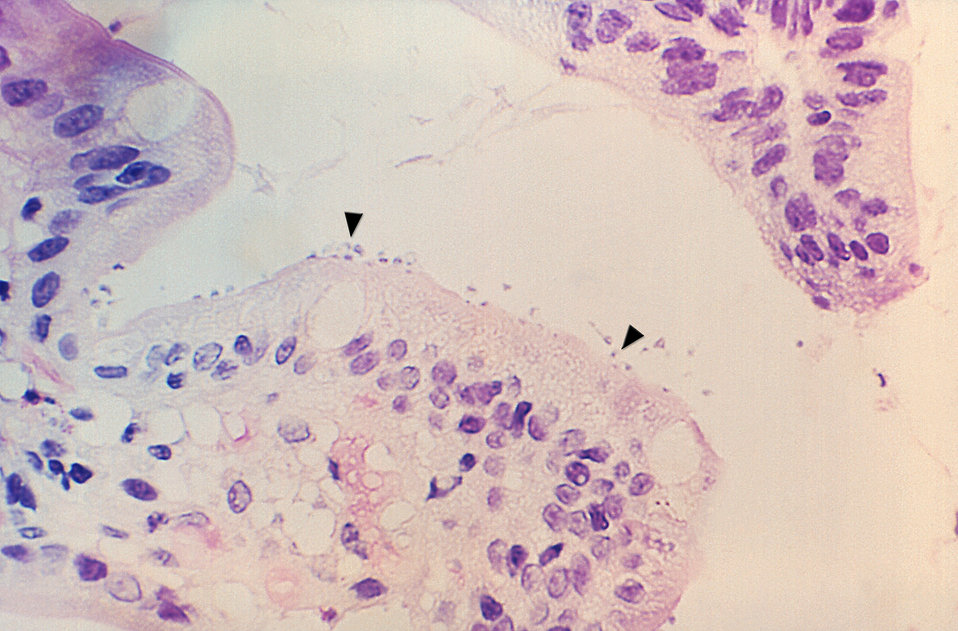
Under low magnification, this photomicrograph reveals some of the histopathologic changes displayed by a section in small bowel tissue biopsy in a case of cryptosporidiosis due to an unknown specie of Cryptosporidium. In this particular view, Cryptosporidium parasites can be seen parasitizing the small bowel epithelial cell lining (arrows). See PHIL 14383, for a greater magnification of this image. (This image was provided by Jonathan W.M. Gold, M.D., Assoc. Dir. Special Microbiology Lab, Assist. Attending Physician, Memorial Sloan-Kettering Cancer Center and Assit. Prof. of Medicine, Cornell Univ. Med. College, New York.)